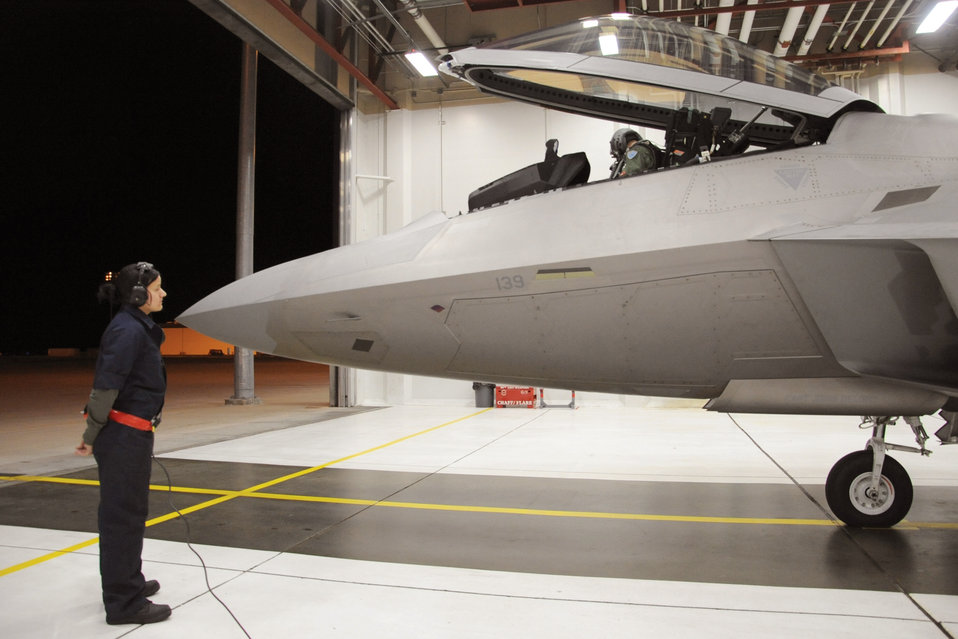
Squadron tests F22s

Airman 1st Class Jennifer Craig (left) and Australian Maj. Matthew Harper prepare an F-22 Raptor for departure to Tyndall Air Force Base, Fla., Oct. 30, 2010, from Joint Base Elmendorf-Richardson, Alaska. Airman Craig is assigned to the 90th Aircraft Maintenance Unit and Major Harper is a 90th Fighter Squadron pilot.